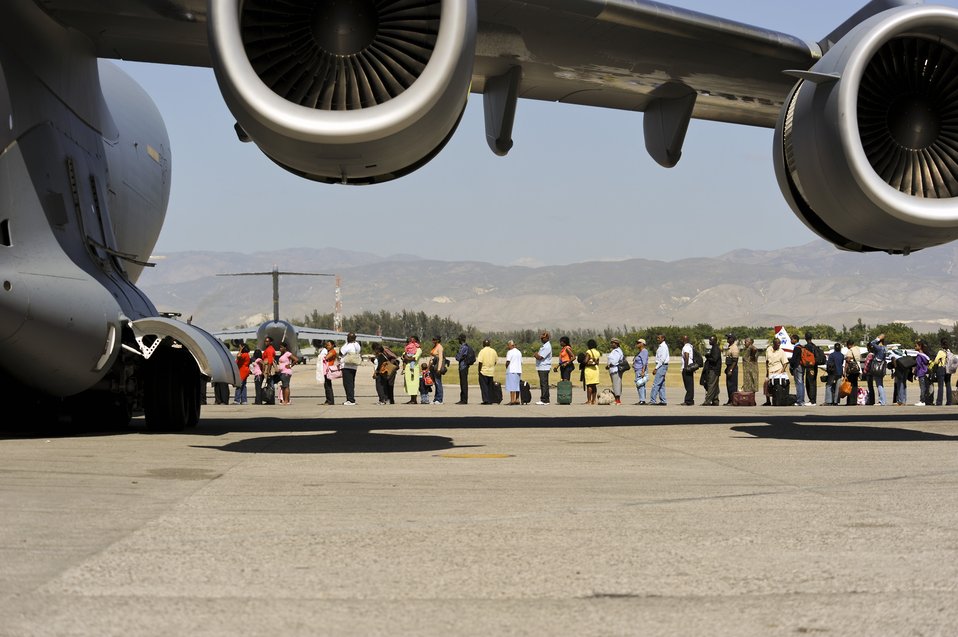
Evacuation

Haitians stand in line as they wait to board a C-17 Globemaster III at Toussaint L'Ouverture International Airport in Port-au-Prince, Haiti, Jan. 23, 2010. Aircraft from all over the world are flying into the airport to drop off humanitarian aid and transport people out of the country in the aftermath of the devastating earthquake Jan. 12.